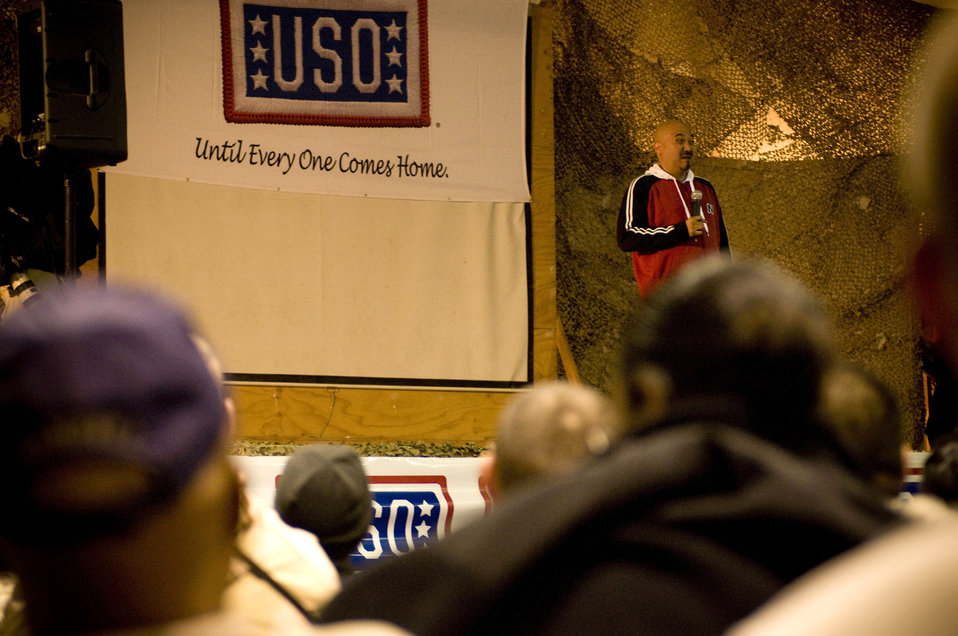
Around the world in 8 days

Edwin San Juan tells a joke to a crowd of Airmen and Soldiers Nov. 13 at Bagram Airfield, Afghanistan. Mr. San Juan is a comedian and emcee for the USO Tour entitled